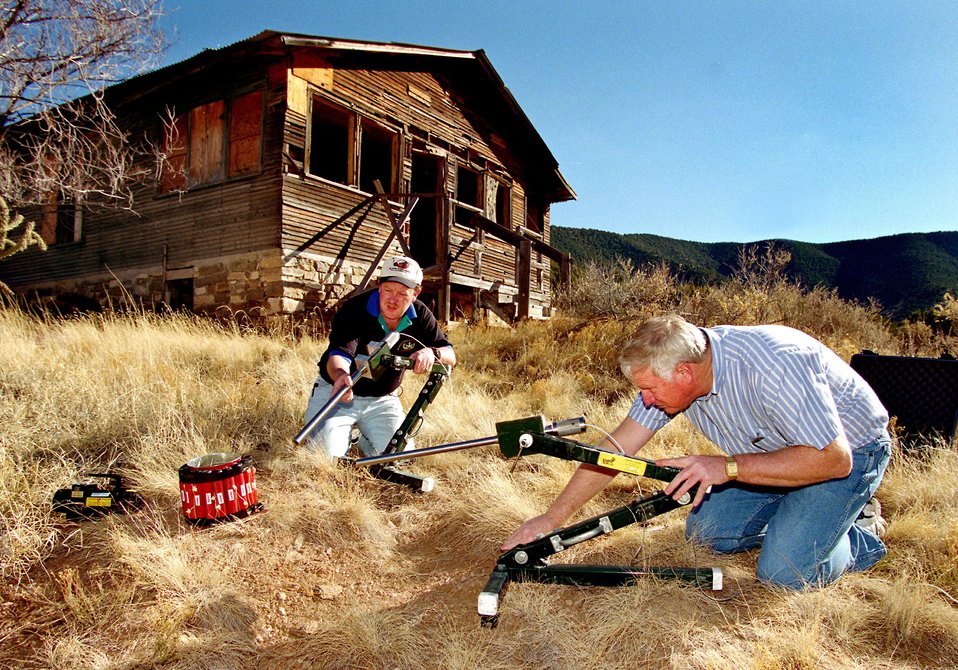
SNL BOMB DISABLEMENT EXPERTS DEMONSTRATE USE OF TWO PAN DISRUPTERS ON A MOCK BOMB.

IN 1994 THE FIRST OPERATION AMERICA TRAINING PROGRAM WAS HOSTED BY SNL. SINCE THEN THERE HAVE BEEN REGIONAL WORKSHOPS THROUGHOUT THE NATION THAT INCLUDE CLASSROOM INSTRUCTION AND RANGE DEMONSTRATIONS OF BOMB DISABLEMENT TECHNIQUES. THE PERCUSSION-ACTUATED NON-ELECTRIC DISRUPTER, DEVELOPED AT SANDIA HAS BECOME A PRIMARY TOOL USED BY BOMB SQUADS TO DISABLE CONVENTIONAL, HANDMADE-TYPE BOMBS REMOTELY.